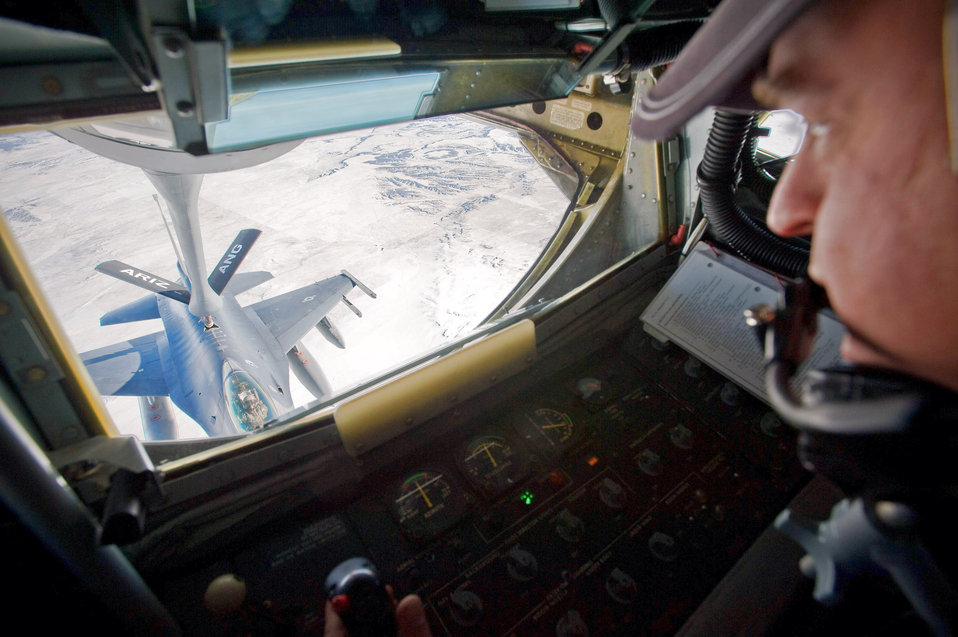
Gas and go

Master Sgt. Jeffrey Madorski refuels an F-16 Fighting Falcon from a KC-135 Stratotanker Dec. 1 over the Southwestern United States. The F-16 was en route to Barksdale Air Force Base, La., to take part in Green Flag East, a pre-deployment exercise for Air Combat Command flying units that perform close-air support and precision-guided munitions delivery. Sergeant Madorski is a KC-135 boom operator with the 161st Air Refueling Wing with the Arizona Air National Guard. The F-16 is from the 120th Fighter Squadron of the Colorado Air National Guard.